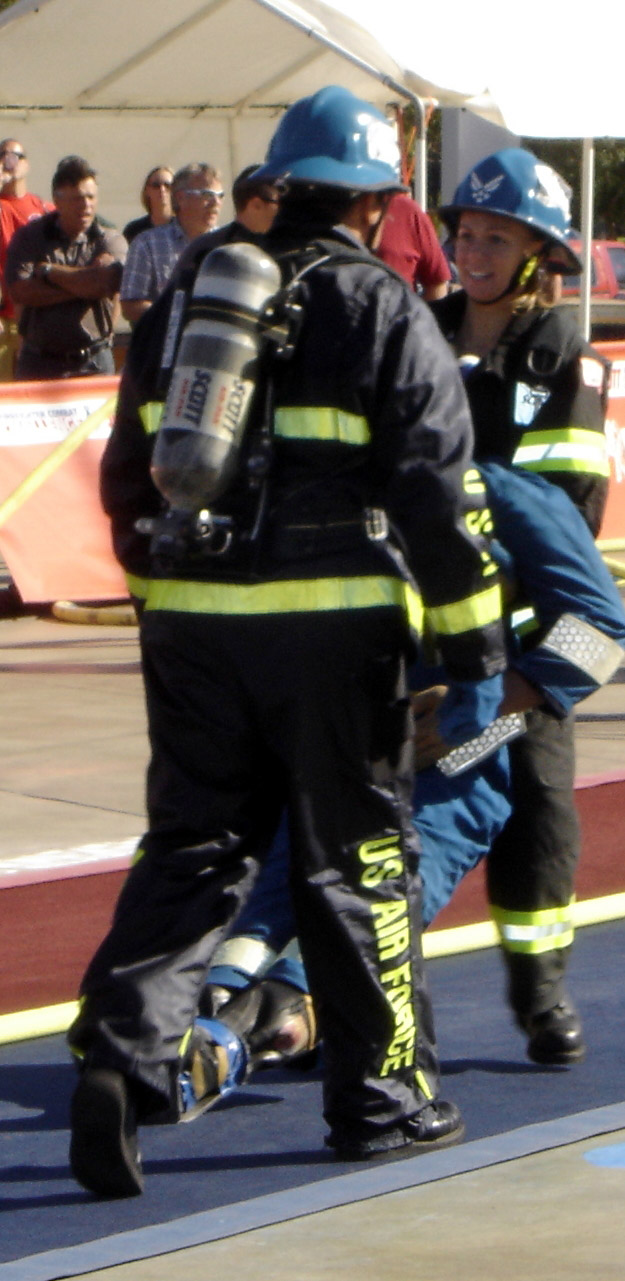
Travis firefighters crowned world champs for third straight year

Shenah Groom carries a 175-pound